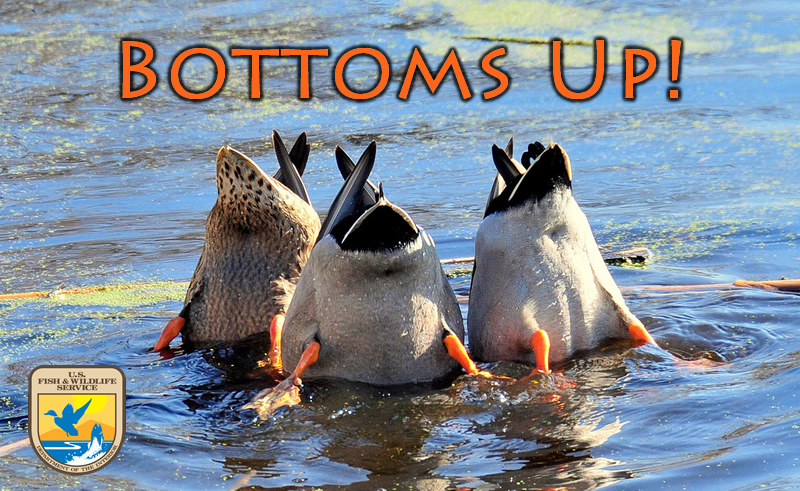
Bottoms Up!